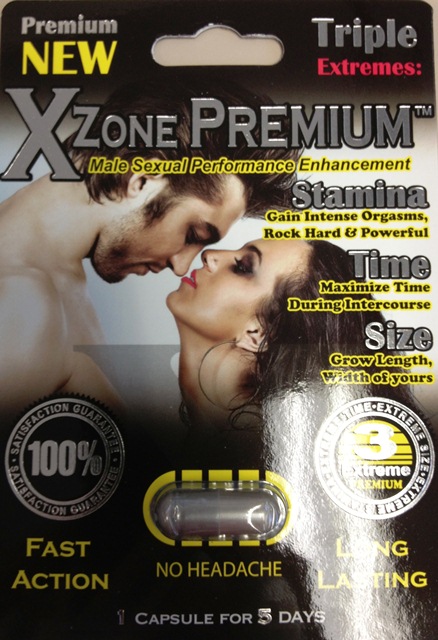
Xzone Premium

September 24, 2013 - The FDA is advising consumers not to purchase or use 'Xzone Premium' a product promoted and sold for sexual enhancement. The product was found to contain undeclared sildenafil, tadalafil, and dapoxetine. For more information, go to, www.fda.gov/Drugs/ResourcesForYou/Consumers/BuyingUsingMe...

And read this Consumer Update: Beware of Fraudulent ‘Dietary Supplements’